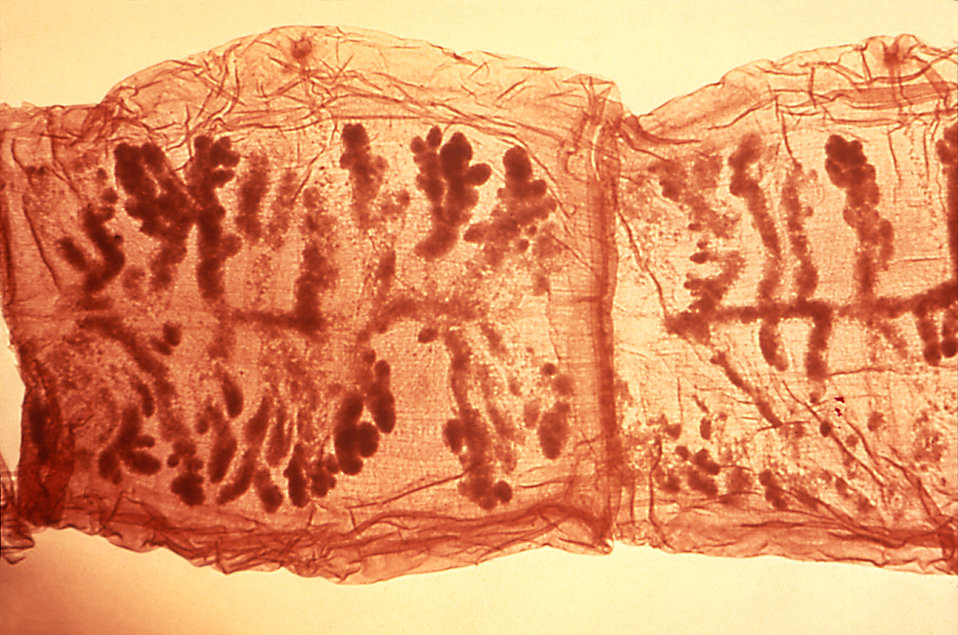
This micrograph reveals the organ morphology within Taenia solium tapeworm proglottids.